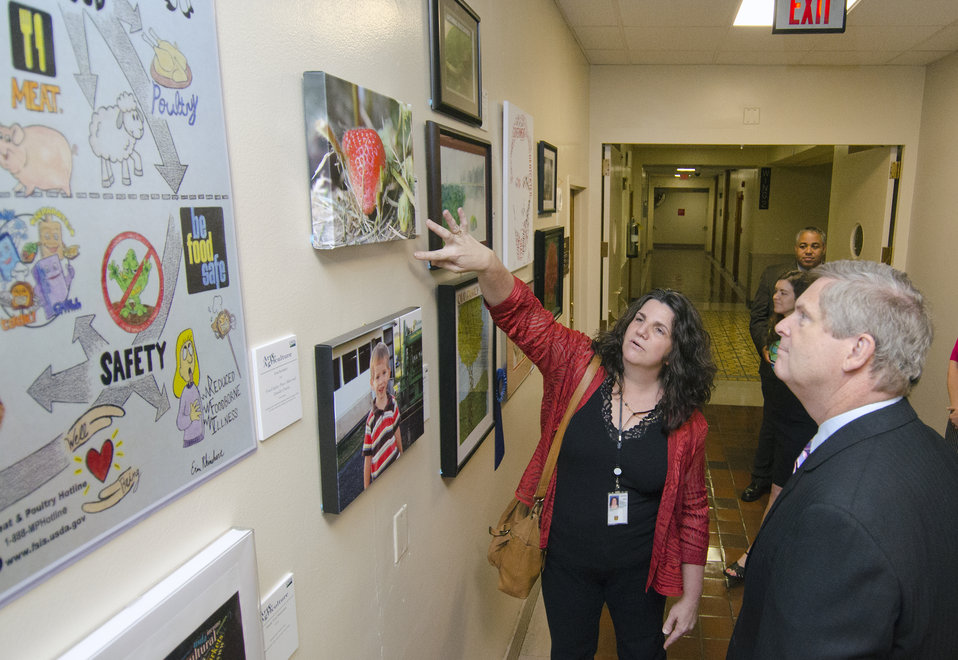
Agriculture Secretary Tom Vilsack visits the gallery of winning entries and talks with Anna J. Arrowsmith at the Art & Agriculture competition in the South Building, Washington, D.C on Thursday, May 31, 2012. U.S. Department of Agriculture (USDA) full-time and part-time employees submitted art based on ten agricultural themes. The event was part of USDA's 150th Anniversary celebration. Winning artwork is on display from May 15 through December 31, 2012. Artistic expression is a creative outlet that is vital for an individual to grow and develop in their environment.